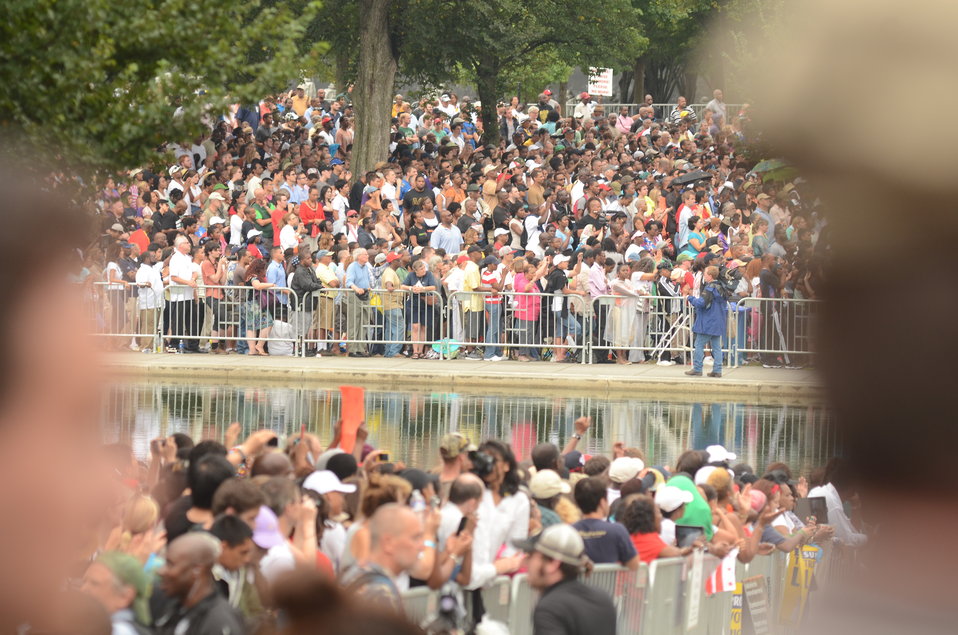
Marchers listen to speakers at the Lincoln Memorial for the March on Washington, D.C., on Wed., Aug. 28, 2013.